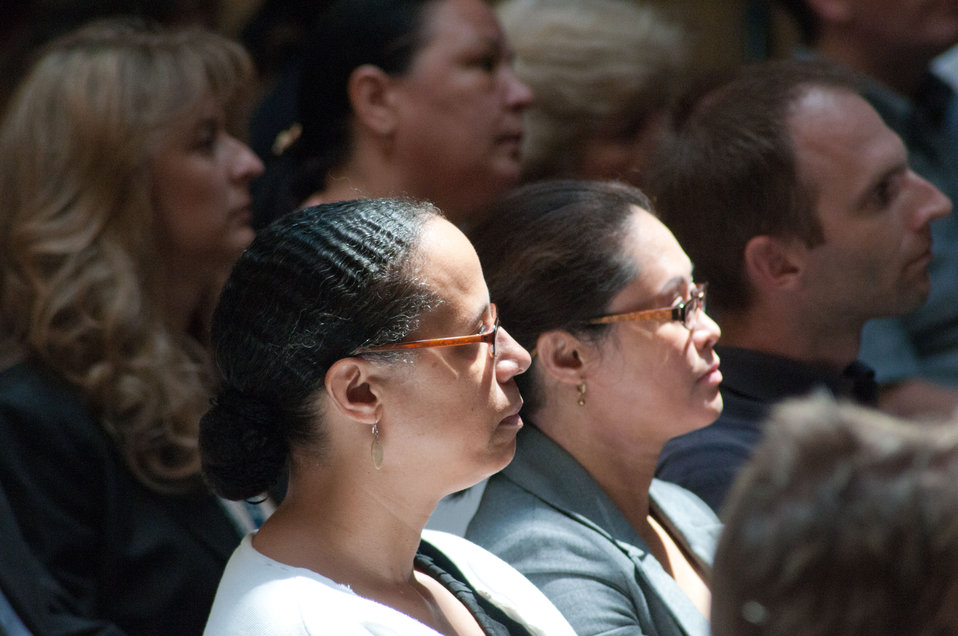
Guests at the International Year of Forests (IYOF) celebration on Friday, June 3, 2011 on the Patio of the Whitten Building, U.S.Department of Agriculture in Washington, DC.